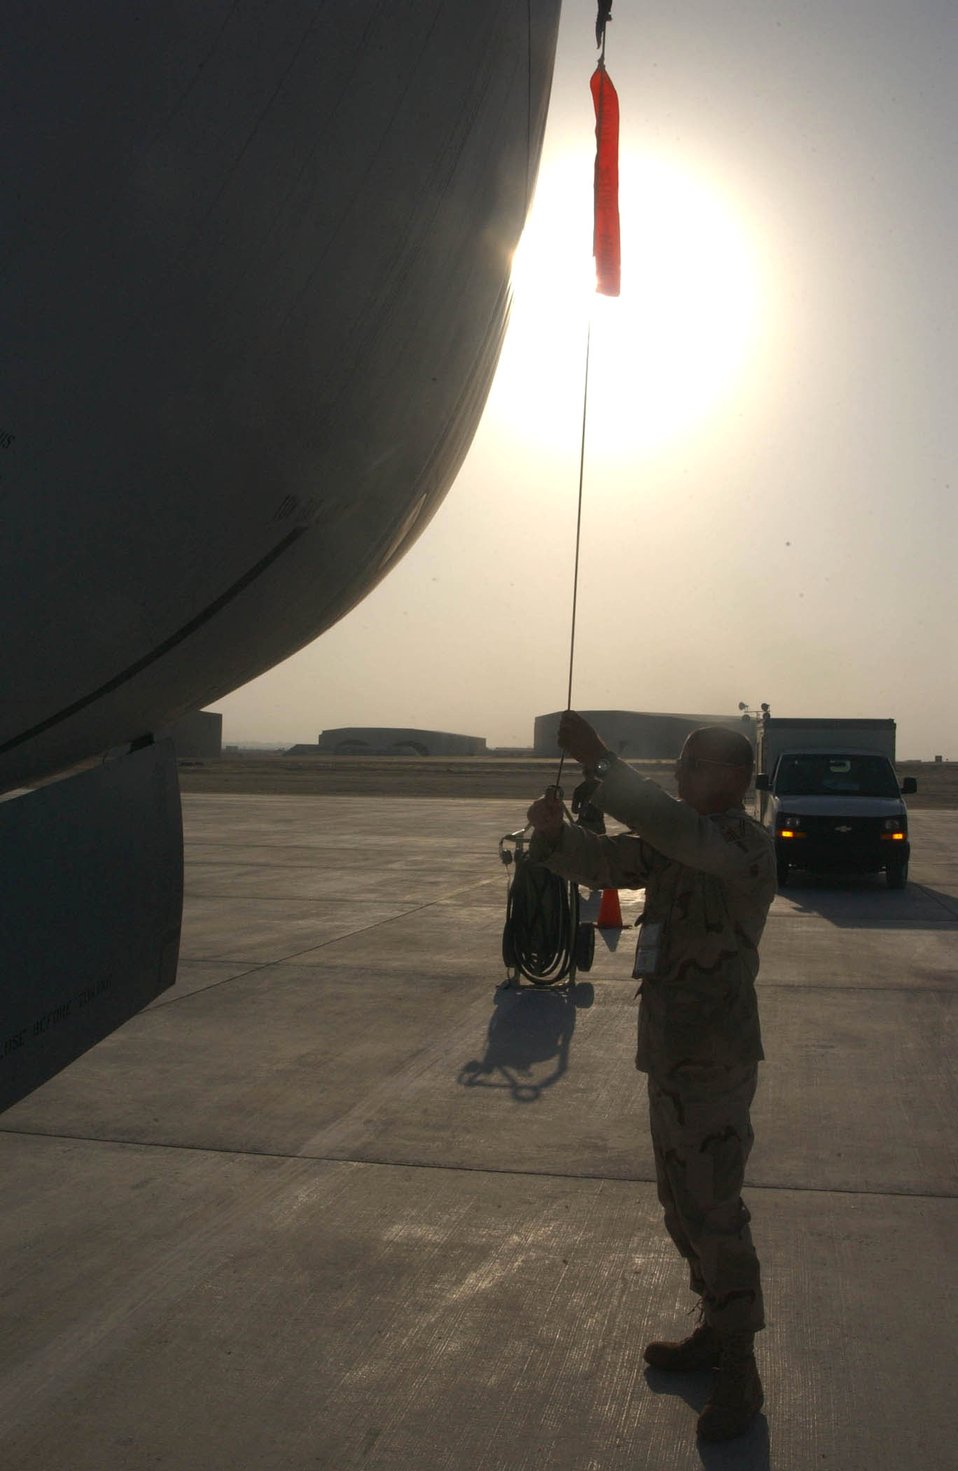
Tanker work

SOUTHWEST ASIA (AFPN) -- Senior Master Sgt. Mike Rumler prepares a KC-135 Stratotanker to fly a mission at this desert air base. Sergeant Rumler is the NCO in charge of the 135 Aircraft Maintenance Unit. He is deployed from McConnell Air Force Base, Kan.